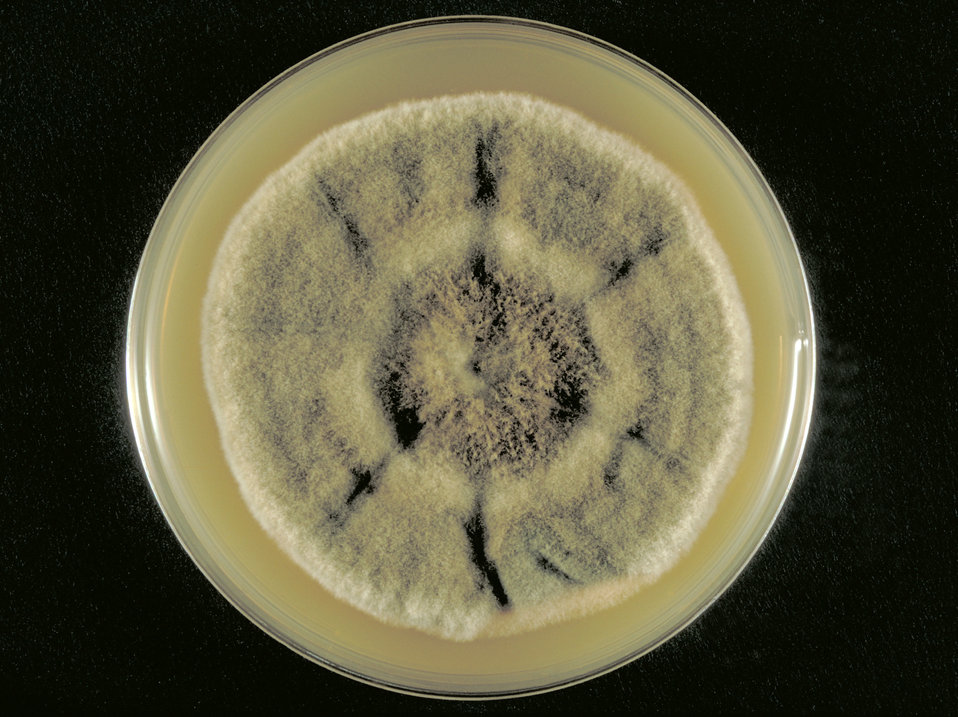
This was a Sabouraud's dextrose agar plate culture growing the fungus Curvularia harveyi.